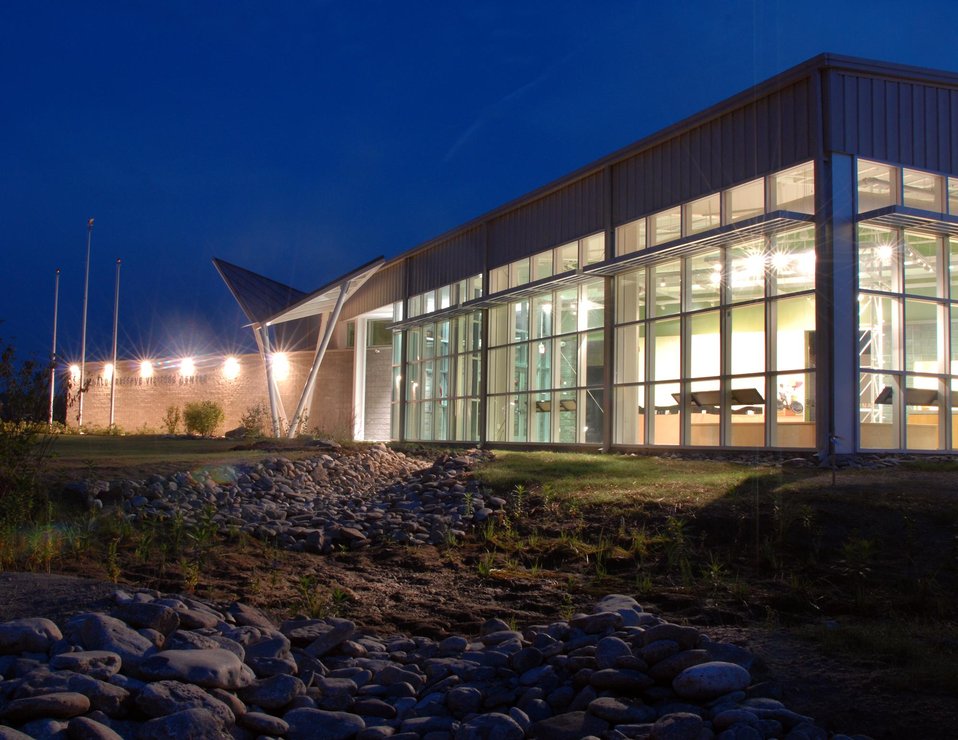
Fernald Preserve Visitors Center.

The Fernald Preserve Visitor Center is a 10,000 square foot green building that celebrates the rich and varied history of the Fernald Site. Information on the site's natural, Native American, settlement and farming, uranium production, and environmental cleanup eras, as well as the recent ecological restoration and legacy management mission, is presented through a series of exhibits. The U.S. Green Building Council awarded the center platinum level certification through its Leadership in Energy and Environmental Design (LEED) program.